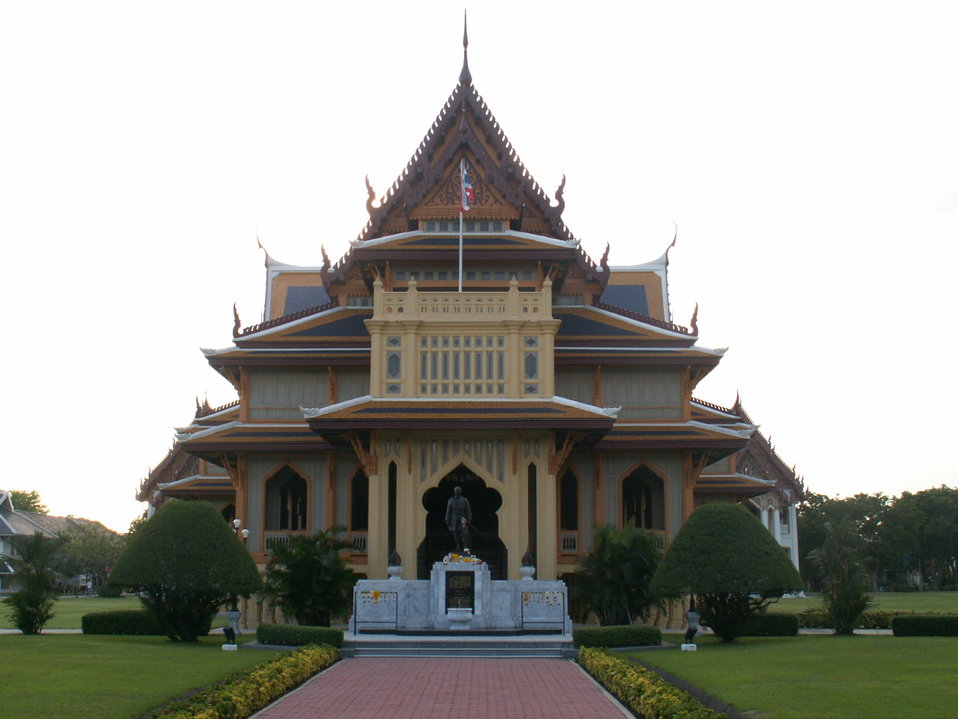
The Assembly Hall